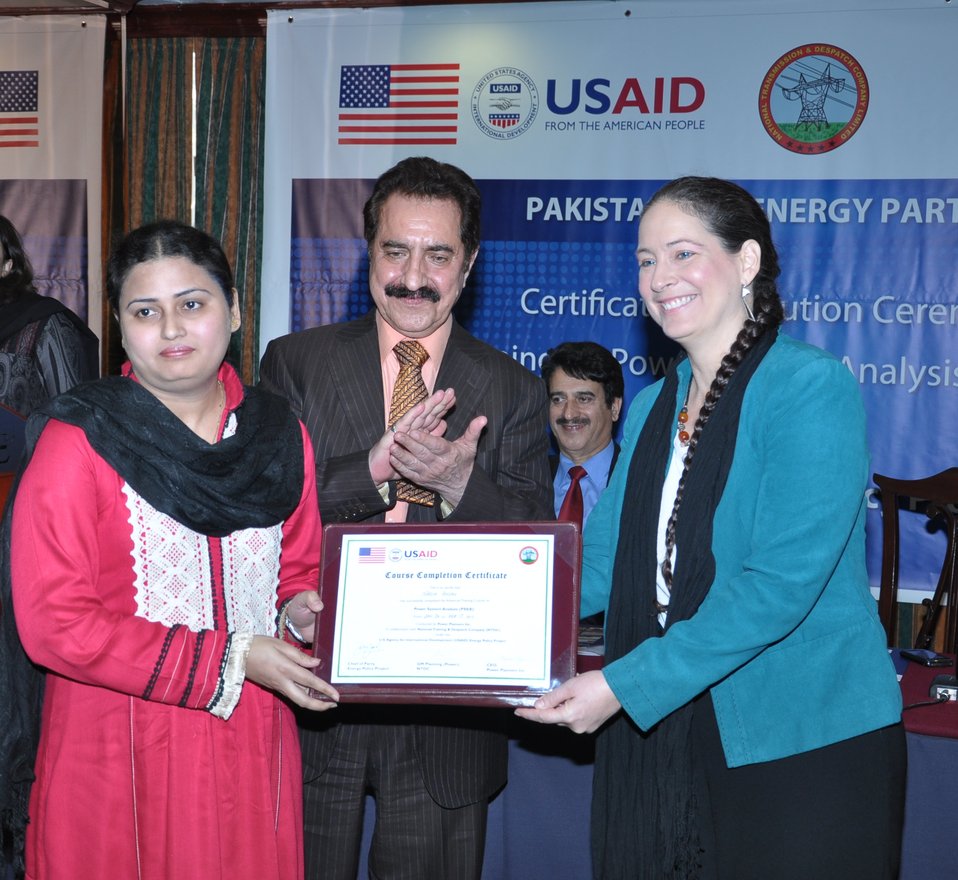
Certificate Distribution Ceremony of Training on Power System Analysis

Melissa Knight, Energy Office Director USAID, awarding certificate to a trainee on the successful completion of training on Power System Analysis.
The Certificate Distribution Ceremony of Training on Power System Analysis was organized in Lahore on February 28, 2012.
The Power System Analysis Training was organized by Energy Policy Project as part of its activities for the power sector entities capacity building program and supporting energy sector reforms.